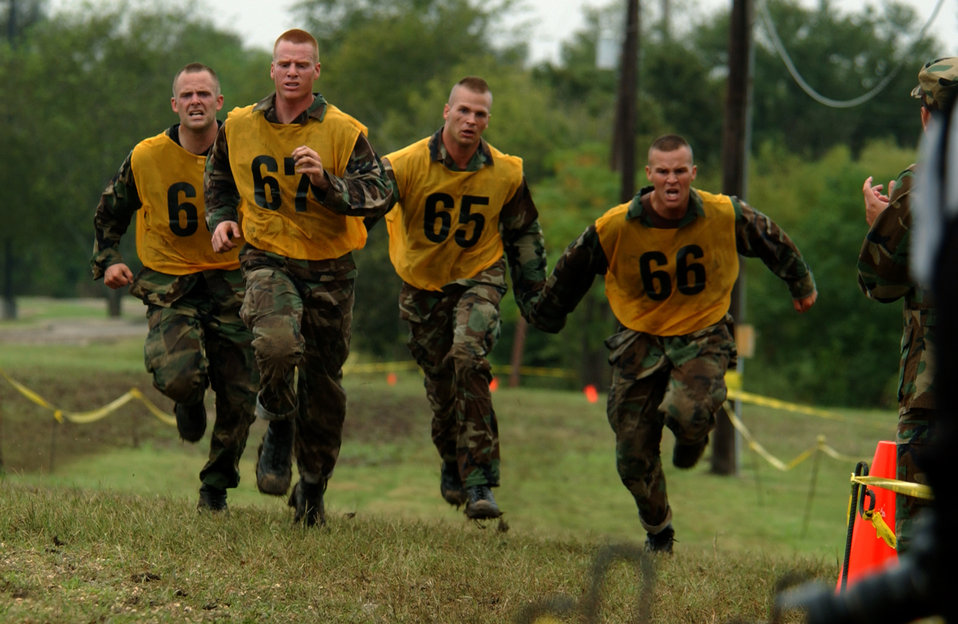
Defender Challenge 2004

LACKLAND AIR FORCE BASE, Texas - The U.S. Air Forces in Europe Defender Challenge obstacle course team completes the obstacle course here Oct. 23. Defender Challenge is a security forces competition pitting competitors from major commands against one another over a series of events including marksmanship, tactics and physical fitness.